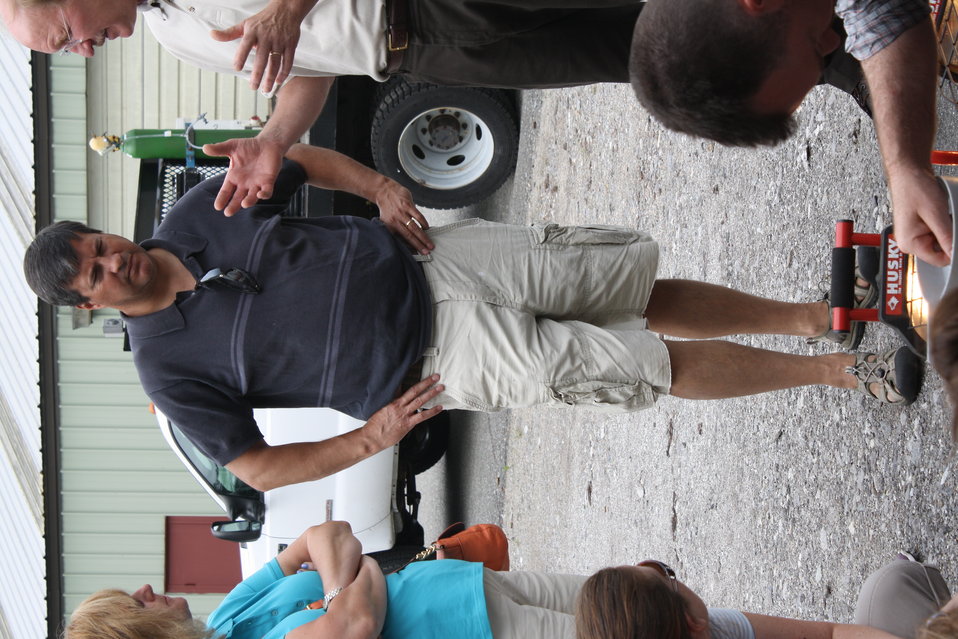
Nashua National Fish Hatchery welcomes regional office employees

Viewing the gentle stirring of shad eggs in sunlight to promote hatching.